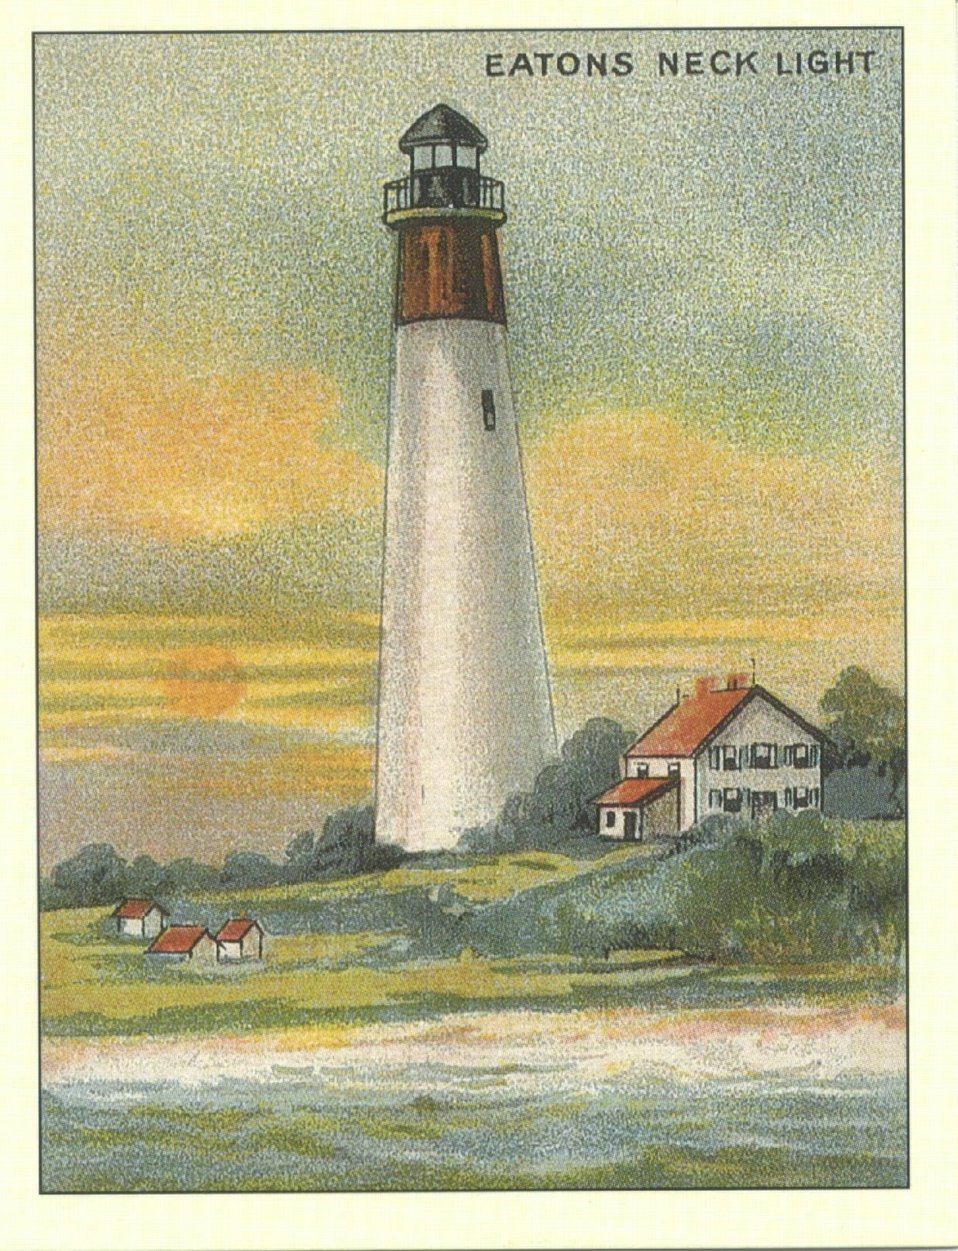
Eatons Neck Light